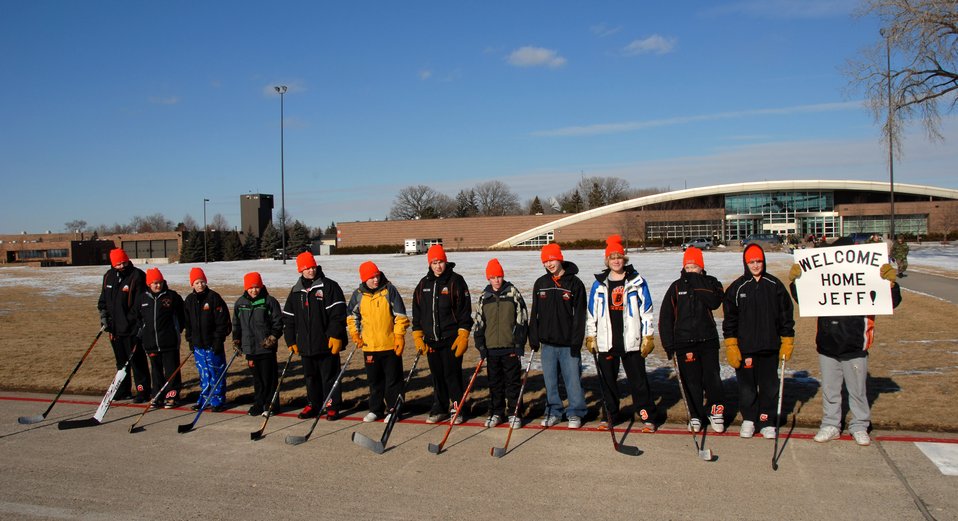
Welcome home coach

Members of the